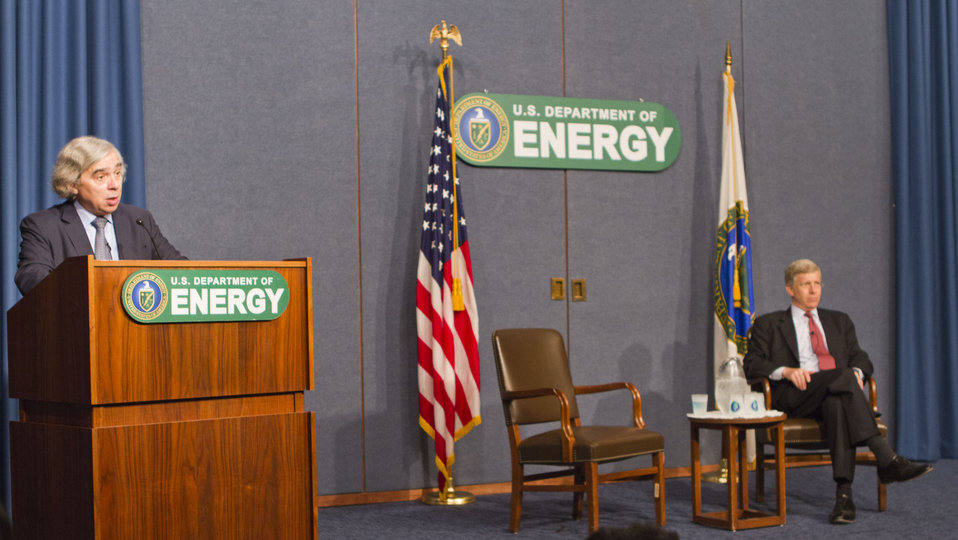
DOE Town Hall

On May 22, 2013, newly sworn-in Energy Secretary Dr. Ernest Moniz opened up a town hall forum. DOE employees were invited to attend, and submit questions to staff.